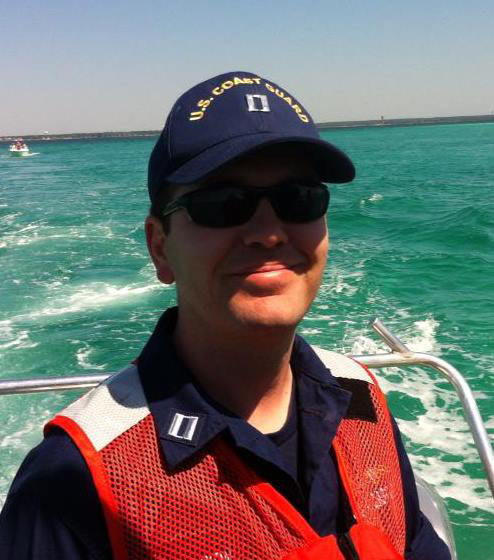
Mike Dixon-Mountain-Prairie Region

Coast Guard veteran Mike Dixon is a Wildlife Biologist currently with the Region’s Migratory Birds Program.